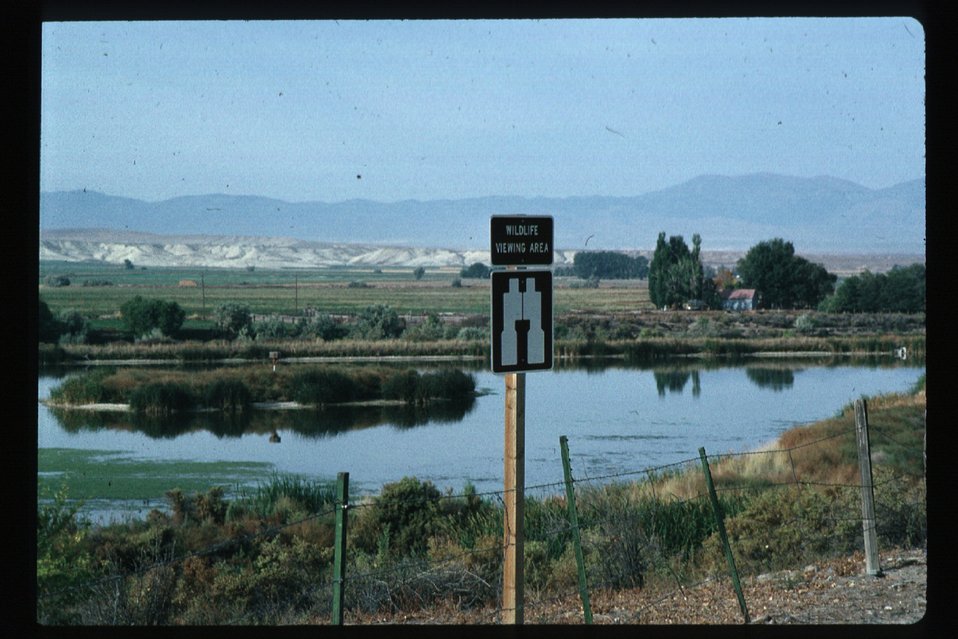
Riparian area sign LSRD Lower Snake River District